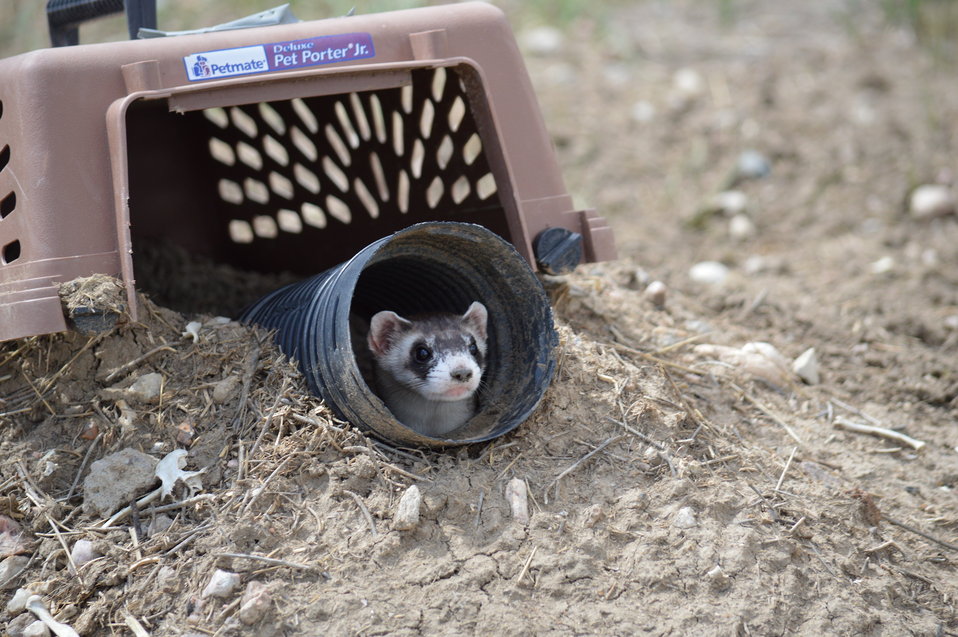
Interns visit the NBFFCC

In the summer of 2012, USFWS Region 6 interns visited the National Black-footed Ferret Conservation Center (NBFFCC) in Colorado to learn how the program reintroduces the endangered Black-footed ferret back into its native habitat.